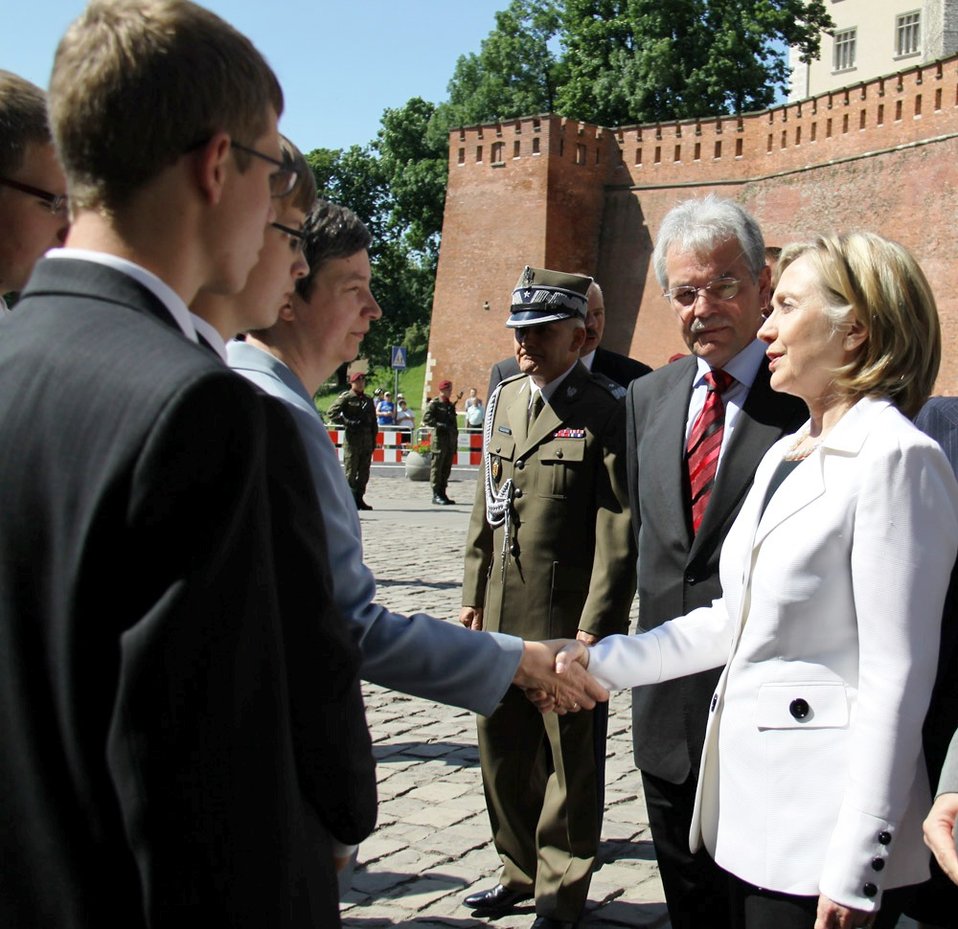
Secretary Clinton Meets With the Widow and Sons of Polish Undersecretary of State Andrezj Kremer

U.S. Secretary of State Hillary Rodham Clinton meets with the family, widow and sons, of Polish Undersecretary of State Andrzej Kremer, who died in the plane crash on April 10, 2010, in Krakow, Poland, on July 3, 2010.